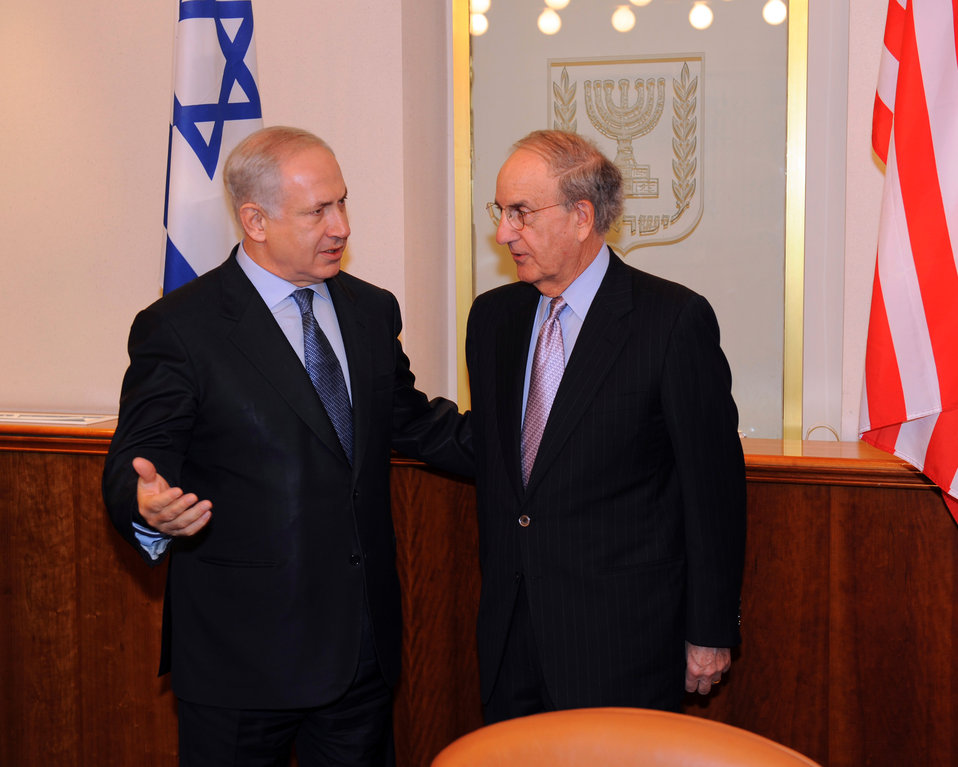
Special Envoy Mitchell Meets With Israeli Prime Minister

Special Envoy George J. Mitchell meets with Israeli Prime Minister Benjamin Netanyahu at the Prime Minister Office in Jerusalem November 2, 2009.